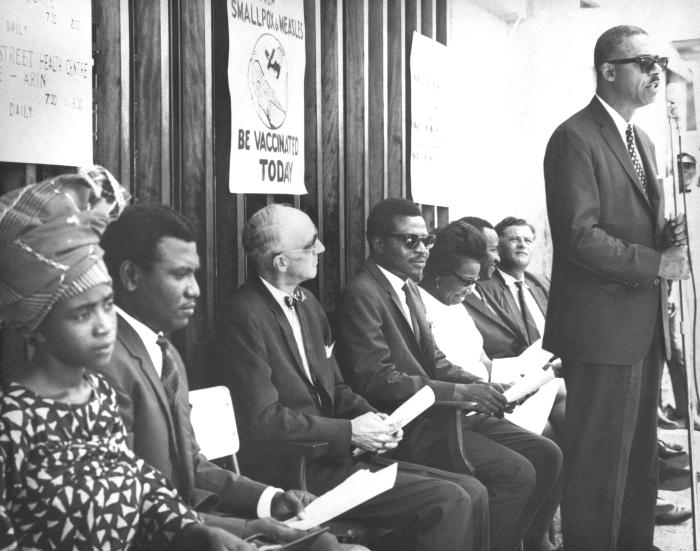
Seated on this 1967 panel discussing the eradication of smallpox were some of Nigeria's Smallpox Eradication Program officials.